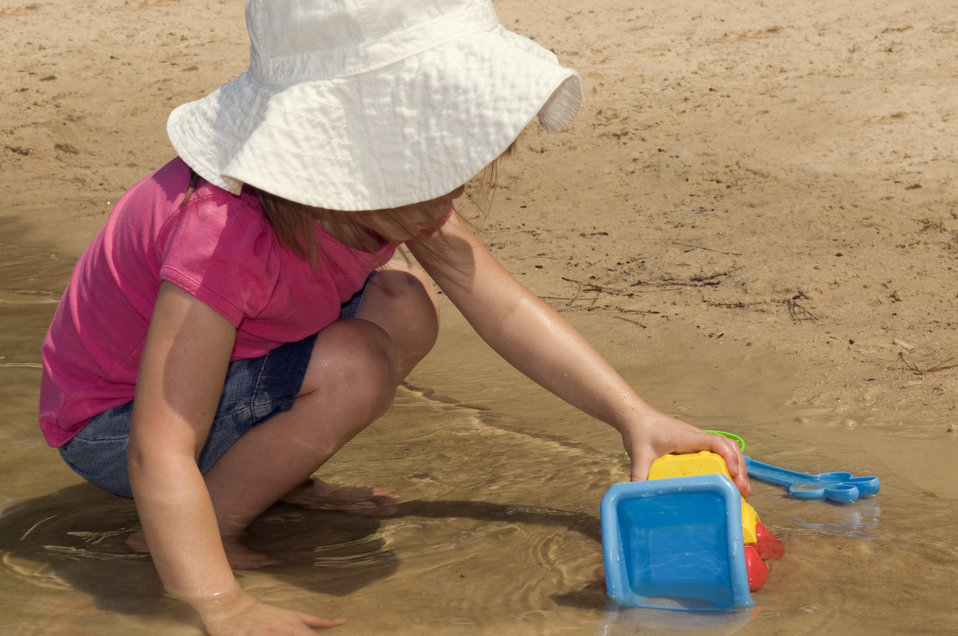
A young girl playing on the beach

The young girl depicted here, was kneeling at the water's edge at one of Georgia's beautiful lakes. She was playing with the plastic toys she'd brought from home. Note the large white hat she was wearing atop her head protecting her from the harmful rays of the sun, as well as a bright pink top, and a pair of denim shorts, all shielding her from damaging ultraviolet rays.